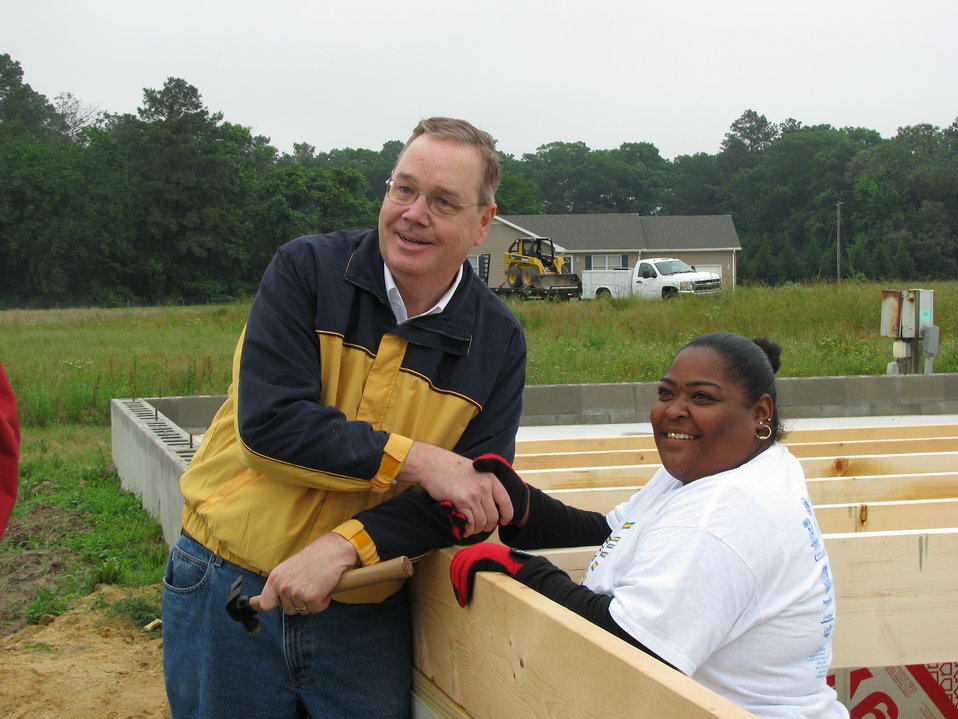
tonsager and homeowner

U.S. Department of Agriculture (USDA) Under Secretary Rural Development (RD) Dallas Tonsager visits with prospective homeowner Linda Diaz at a self-help housing subdivision in Laurel, Delaware on June 4, 2009. June is National Homeownership Month. USDA helps thousands of limited-income families each year as they purchase or repair homes.